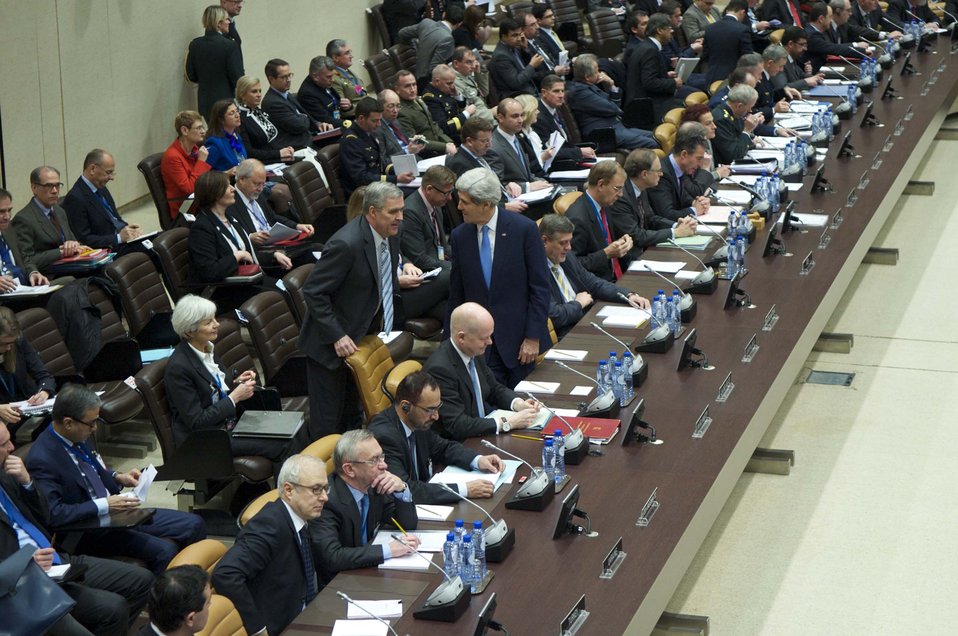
Secretary Kerry Speaks With Ambassador Lute

U.S. Secretary of State John Kerry speaks with U.S. Ambassador to NATO Douglas Lute before a meeting to discuss the current and future security situation in Afghanistan at NATO Headquarters in Brussels, Belgium, on December 4, 2013.